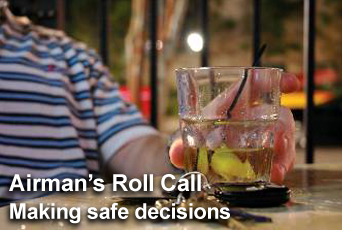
Airman's Roll Call

Enjoy this holiday season, but be wise about how you celebrate. Remember two words that always go well together: arrive alive.